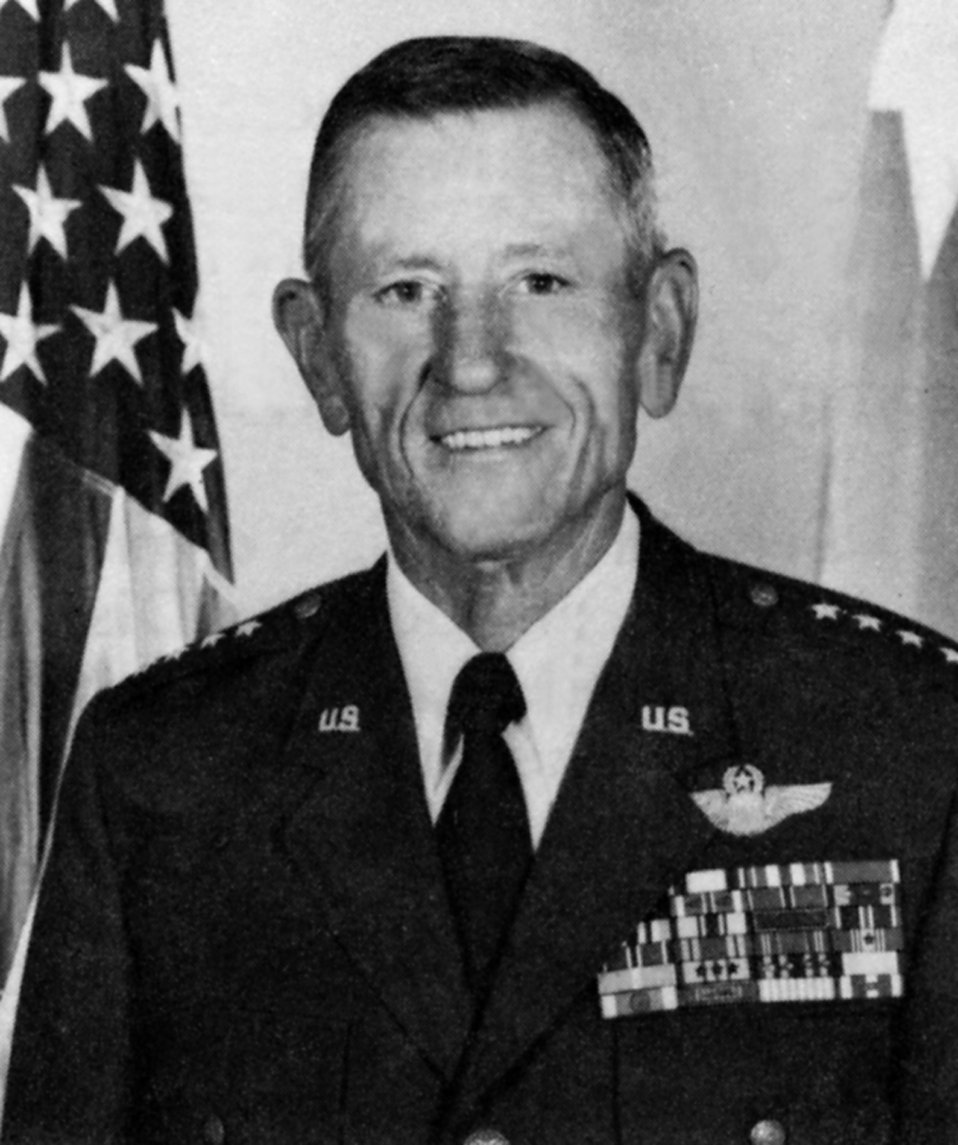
Retired Gen. Bennie L. Davis passed away Sept. 23, 2012, in Georgetown, Texas.